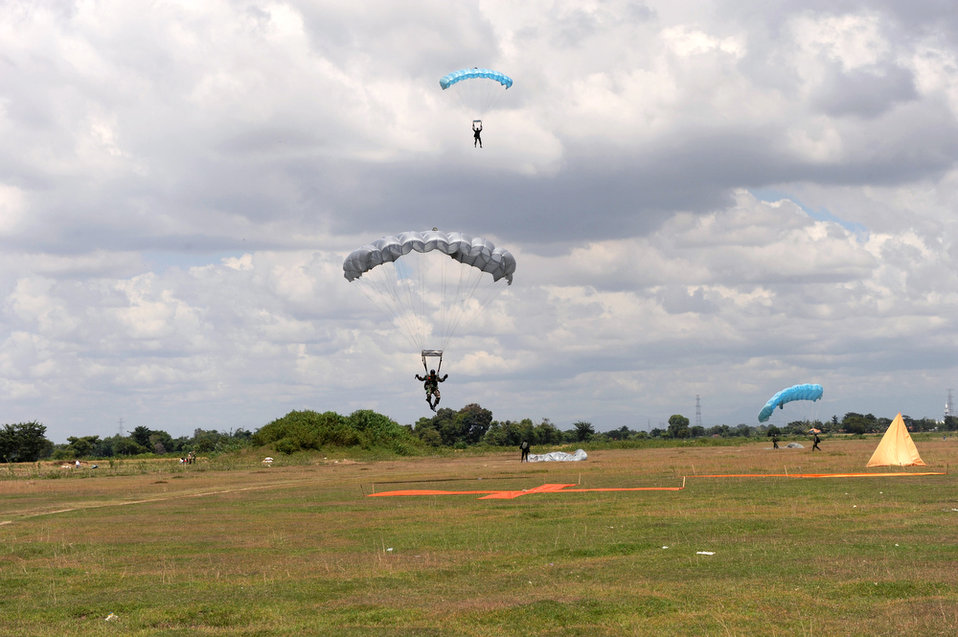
U.S., Indonesian airmen jump into training

Indonesian jumpmasters land near their mark after completing a high-altitude, low-opening jump from an Air Force C-130 Hercules assigned to the 36th Airlift Squadron at Yokota Air Base, Japan, during exercise Cope West 2010 April 21, 2010, in Indonesia.